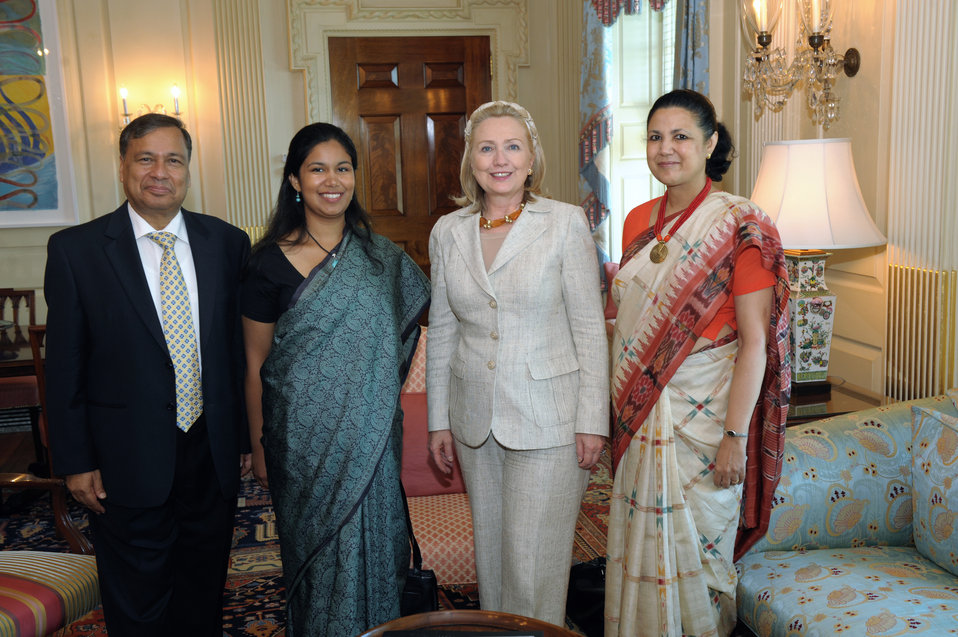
Secretary Clinton Meets With Indian Ambassador Shankar

U.S. Secretary of State Hillary Rodham Clinton, second from right, meets with Indian Ambassador the U.S. Meera Shankar, right, at the U.S. Department of State in Washington, D.C., on July 27, 2011.